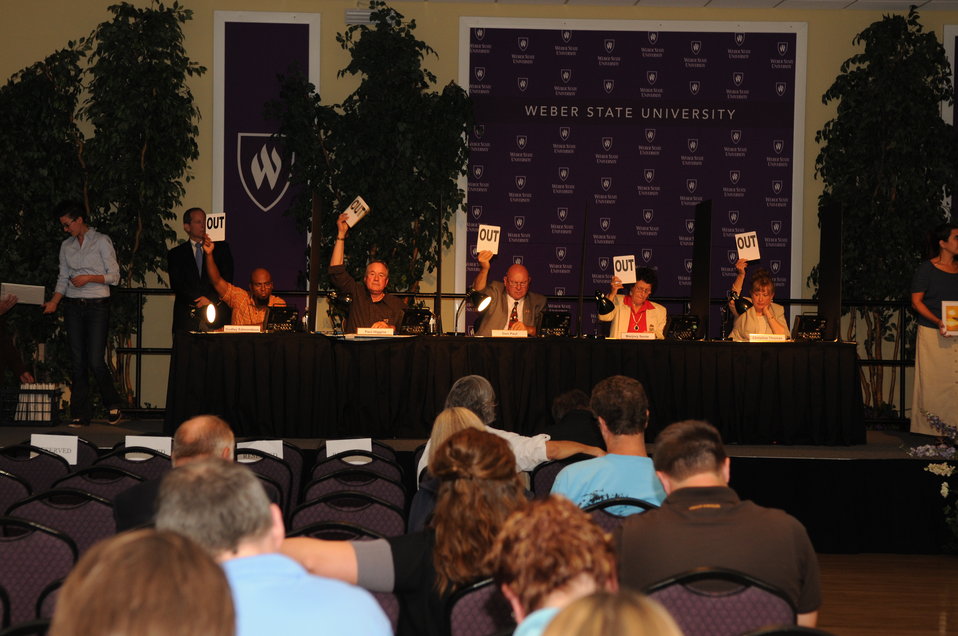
Judging

The U.S. Fish & Wildlife Service sponsored the 2012 Federal Duck Stamp Art Contest September 28 and 29 in Ogden, Utah, at Weber State University. A panel of five judges was responsible for choosing the art work used to design the 2013-2014 Migratory Bird Hunting and Conservation Stamp.